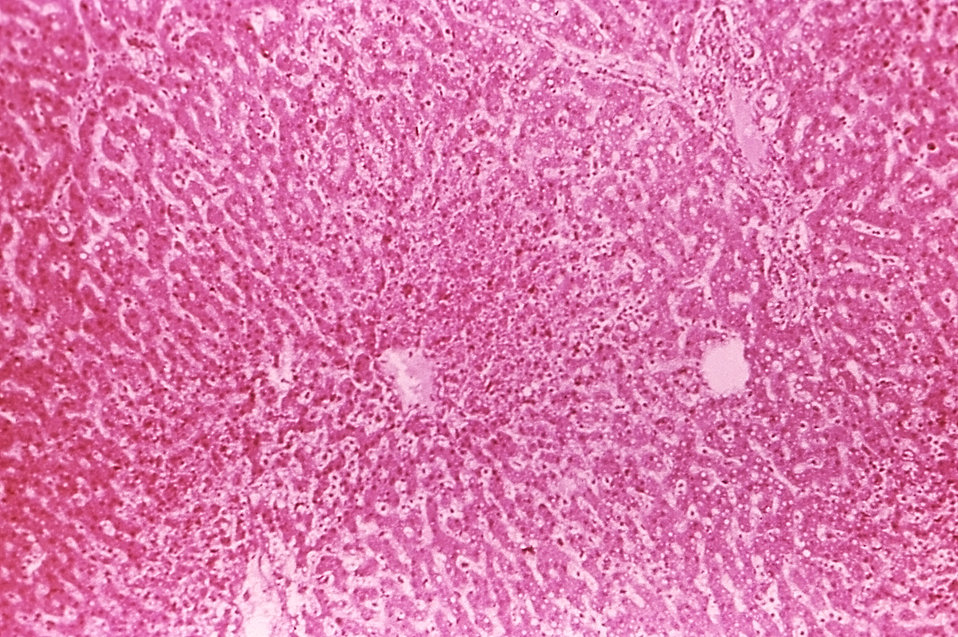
Under a low magnification of only 70X, this hematoxylin-eosin-stained (H&E) photomicrograph depicts the cytoarchitectural changes found in a liver tissue specimen extracted from a Dengue hemorrhagic fever patient in Thailand. This particular view reveals 'focal necrosis of liver cells without an accompanying inflammatory infiltrate. It is the peripheral regions that are the sites of uneven, discrete lymphocytic infiltration.'